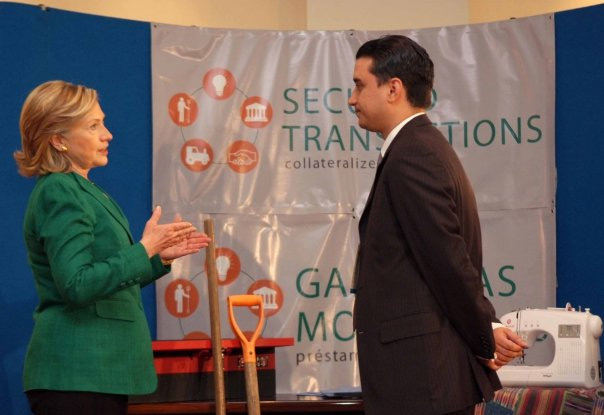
Secretary Clinton With a Member of Secure Transactions

U.S. Secretary of State Hillary Rodham Clinton speaks with a member of Secure Transactions at the Pathways to Prosperity Conference in San José, Costa Rica, March 4, 2010.